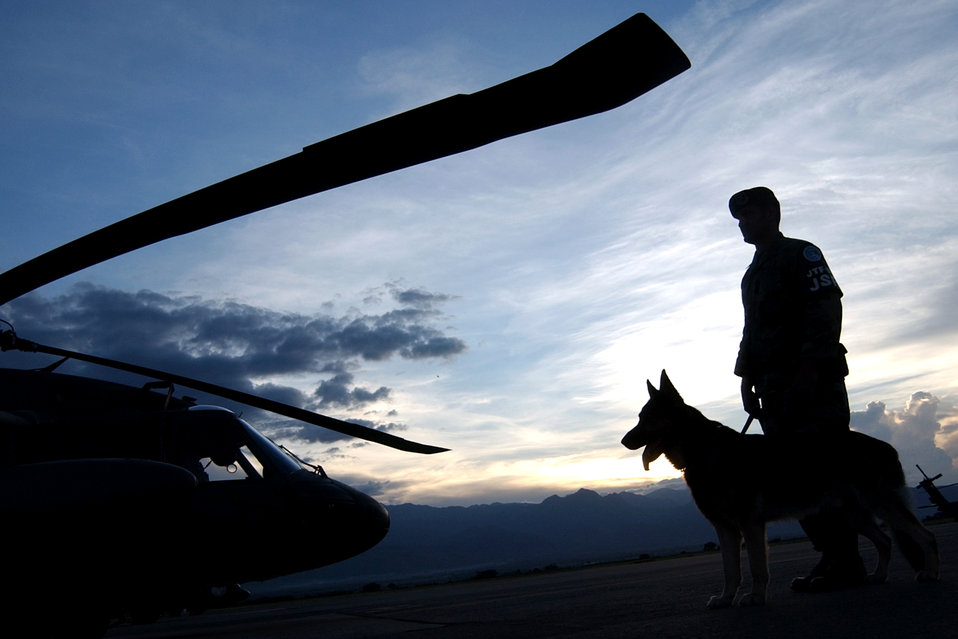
On patrol

Staff Sgt. Rafael Melendez and Hoston patrol the flightline at Soto Cano Air Base, Honduras, Aug. 2. Sergeant Melendez and his military working dog provide direct support to Joint Task Force - Bravo and U.S. customs to prevent the illegal use and transport of narcotics through Central America. They also provide explosive detection for the safety of servicemembers, local nationals and visitors to Soto Cano.